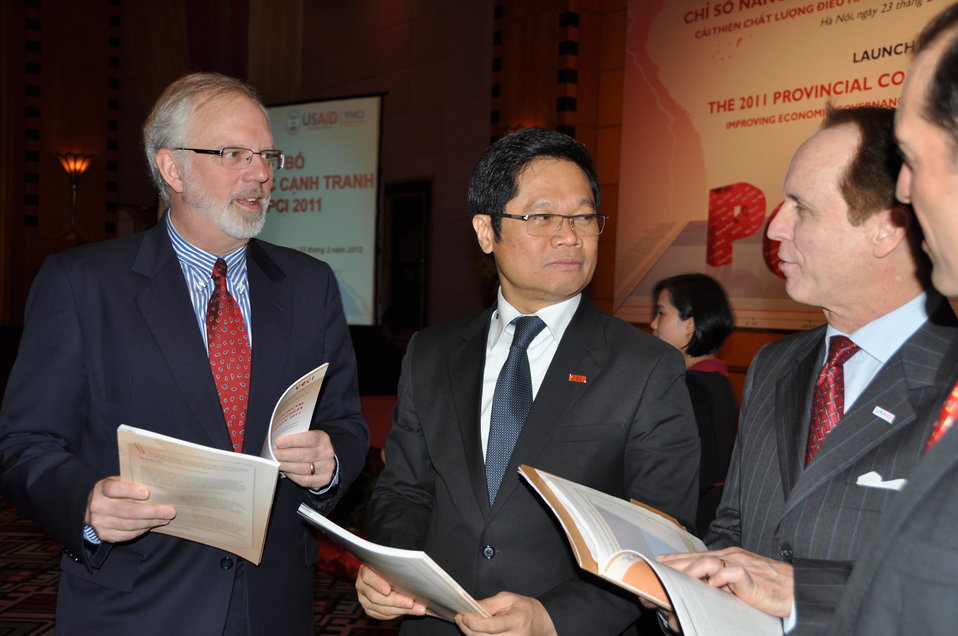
U.S. Ambassador David B. Shear at the Provincial Competitiveness Index 2011 Launch